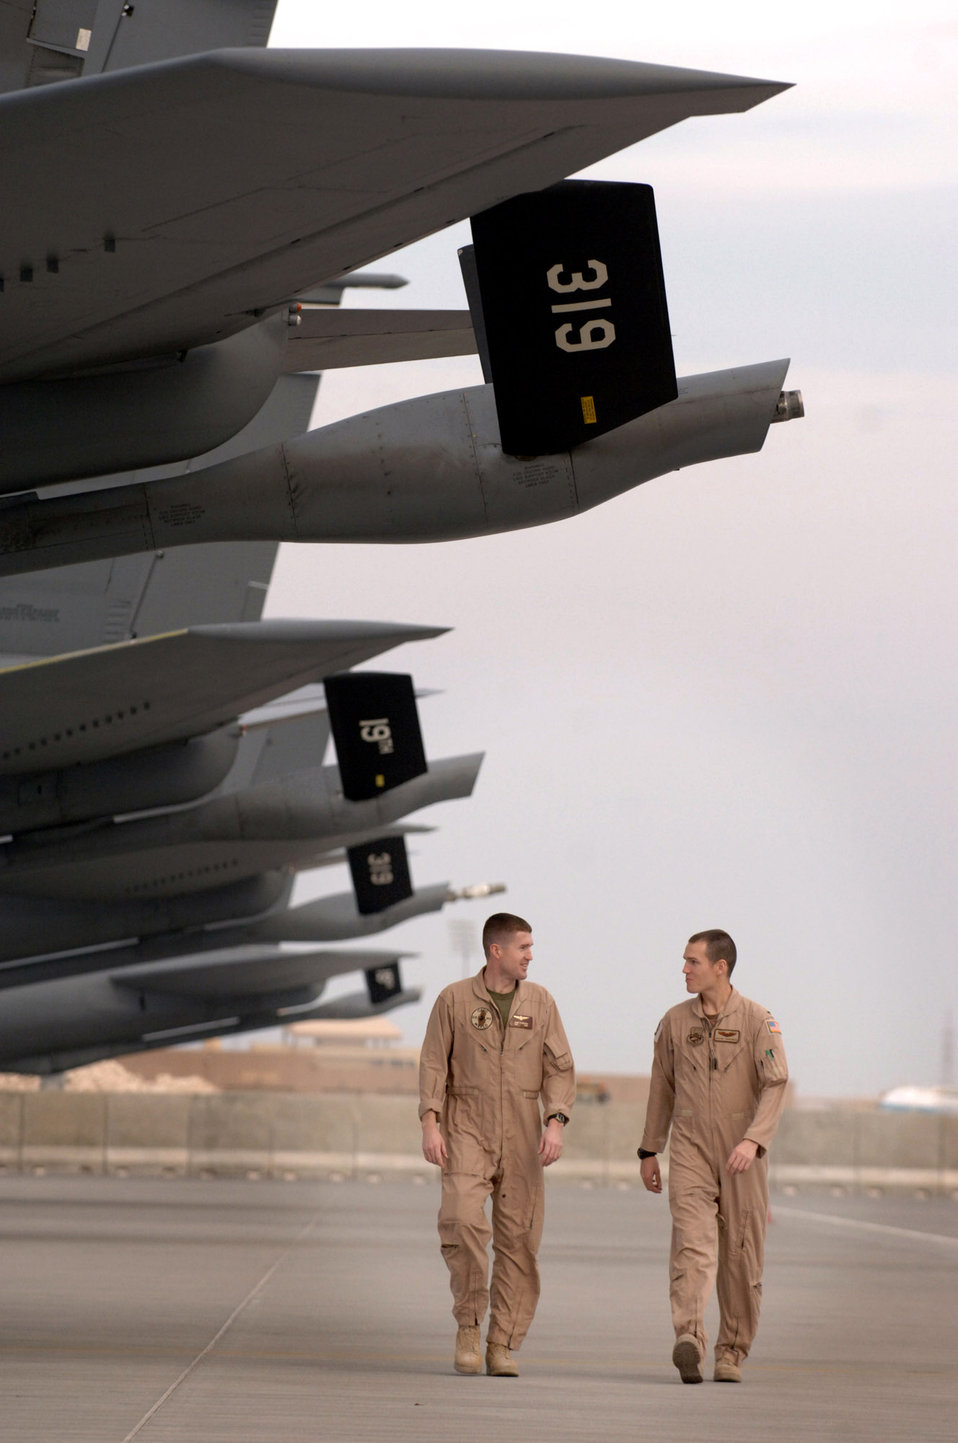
Sibling tanker pilots connect 7,700 miles from home

Marine Capt. Jason Torbensen visits the flightline where his younger brother, Air Force 1st Lt. Dustin Torbensen parks his KC-135 Stratotanker Nov. 28 in Southwest Asia. Captain Torbensen is deployed for one year in Southwest Asia as the 3rd Marine Airlift Wing's liaison officer to the Combined Air Operations Center, and Lieutenant Torbensen is soon to return from a two-month rotation to Southwest Asia. The brothers are from Kaysville, Utah.